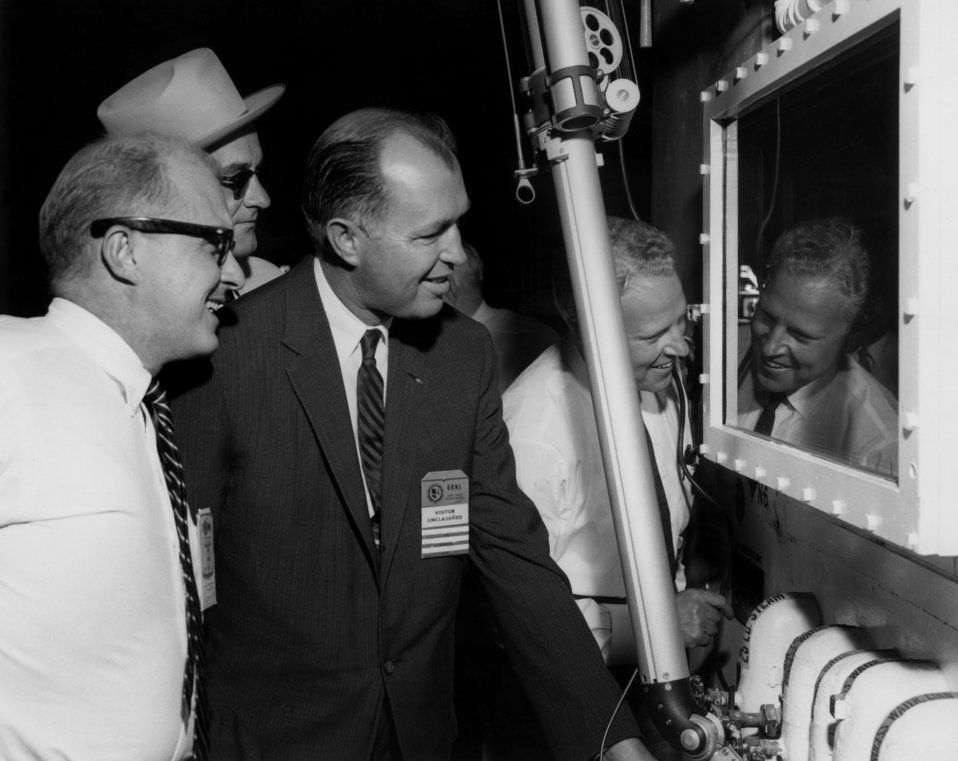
WestcottCayce Pentecost, Senator Lyndon Johnson, Buford Ellington, Senator Albert Gore, operating mechanical hands at hot cell in Oak Ridge

58-0930 DOE photo by Ed WestcottCayce Pentecost, Senator Lyndon Johnson, Buford Ellington, Senator Albert Gore, operating mechanical hands at hot cell in Oak Ridge Reactor Facility at Oak Ridge National Lab. Oak Ridge Tennessee 10-19-1958